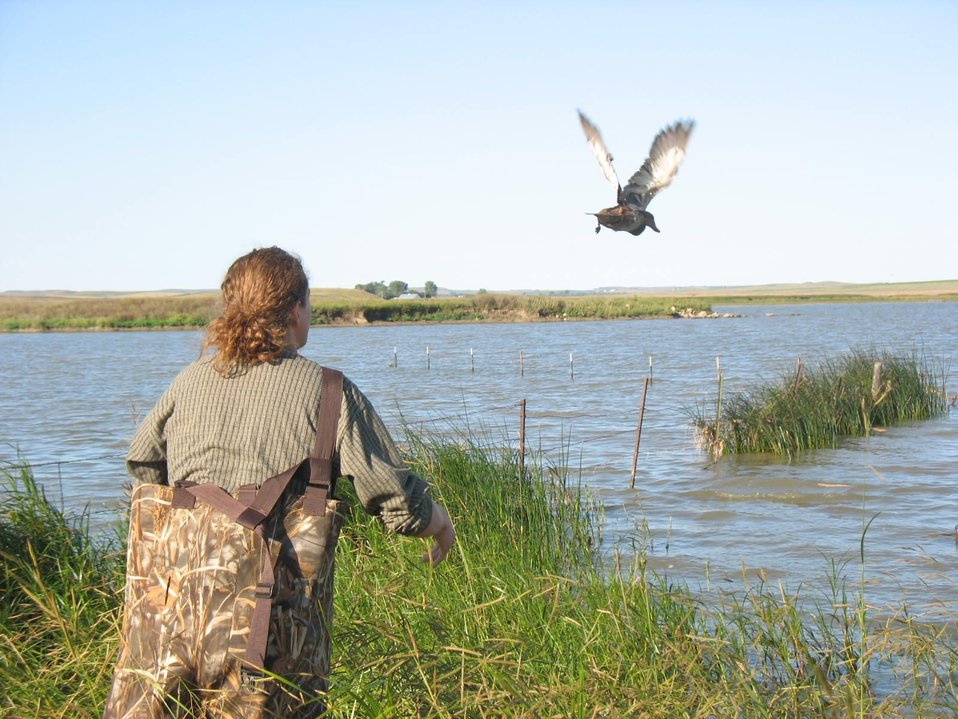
Duck banding, Lake Ilo Refuge

A Fish and Wildlife Service employee releases a duck after banding it for population monitoring at Lake Ilo National Wildlife Refuge, North Dakota. (Todd Gallion,/USFWS)